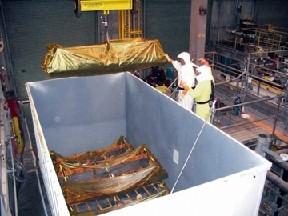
K East Basin, Hanford

A contaminated rack lifted from the K East Basin at the Hanford Site near Richland, WA. The rack is placed into an IP-2 shipping container using the Debris Loadout Station in the K East Basin.